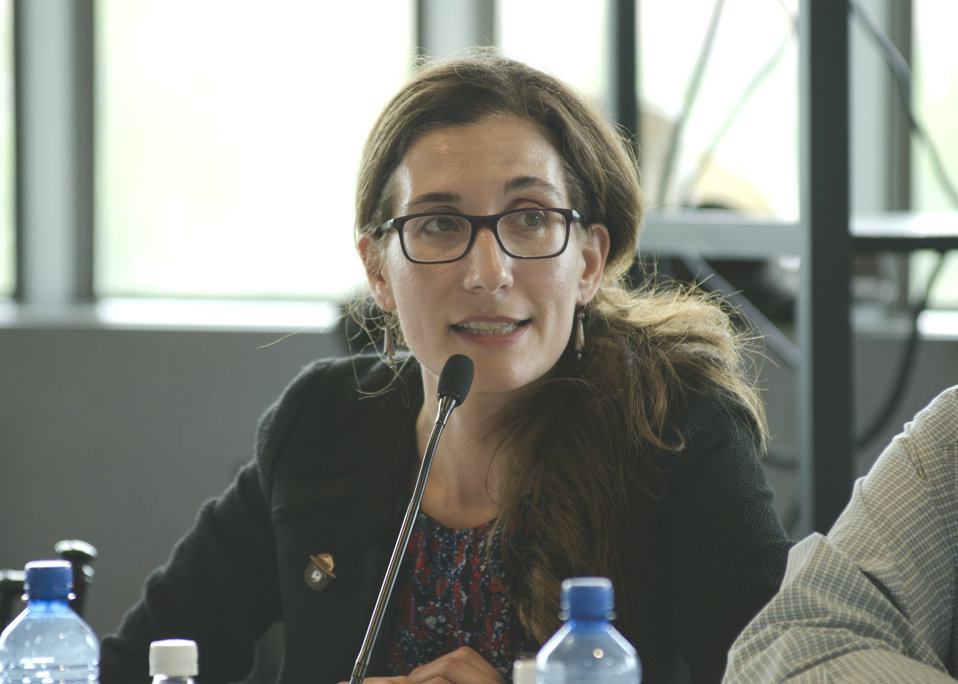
U.S. Department of Agriculture (USDA) Acting Deputy Assistant Secretary Office of Civil Rights Lisa Pino speaks at the conclusion of the first business meeting of USDA’s Council for Native American Farming and Ranching (CNAFR) held at the National Museum of the American Indian in Washington, D.C., on Wednesday, Aug. 15, 2012. CNAFR was created to advise the Secretary on ways to eliminate barriers to participation for Native American Farmers and Ranchers in USDA programs. The Council was established as part of the Keepseagle settlement, and is conducted under the oversight of USDA's Office of Tribal Relations under the Office of the Secretary of Agriculture.